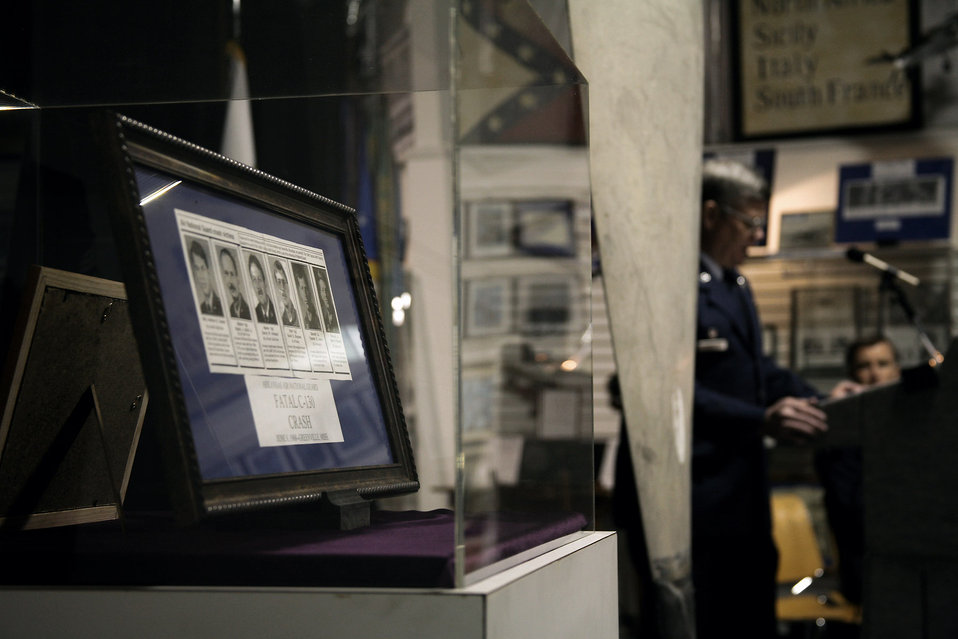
Memorial dedicated in memory of 1988 C-130 crew

Col. Jim Summers addresses the audience at the memorial dedication for the crew of Demon 51 whose C-130 Hercules crashed while on a training mission near the Greenville, Miss., airport June 8, 1988. Colonel Summers is the 189th Airlift Wing commander.